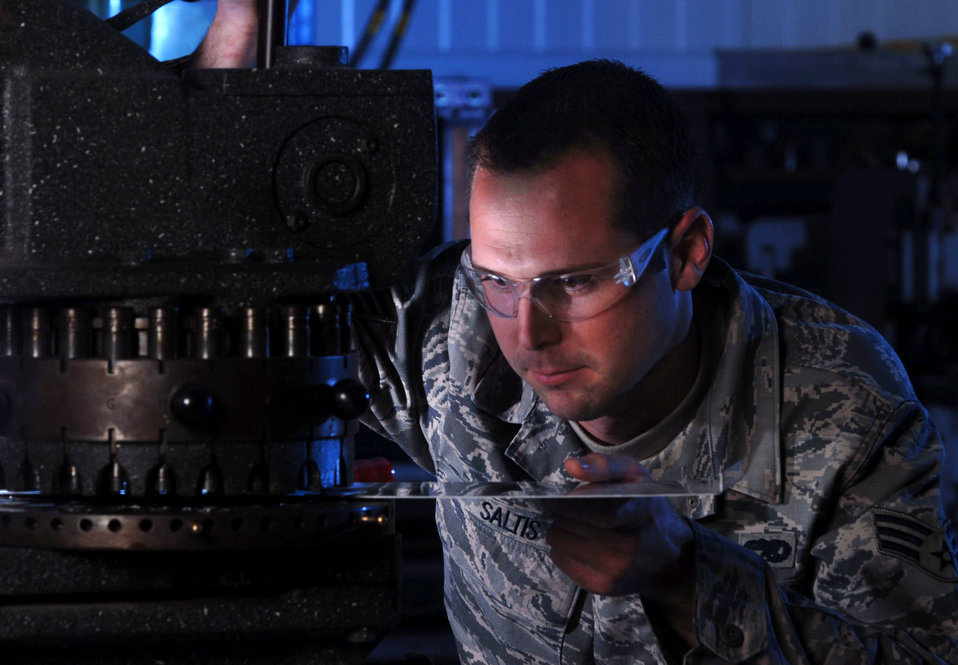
Getting it just so...

Senior Airman Jarrod Saltis, an aircraft structural maintenance technician from the 452nd Maintenance Squadron at March Air Reserve Base, Calif., aligns a Rotex punch Nov. 28 while fabricating a door panel for a C-17 Globemaster III cargo aircraft.